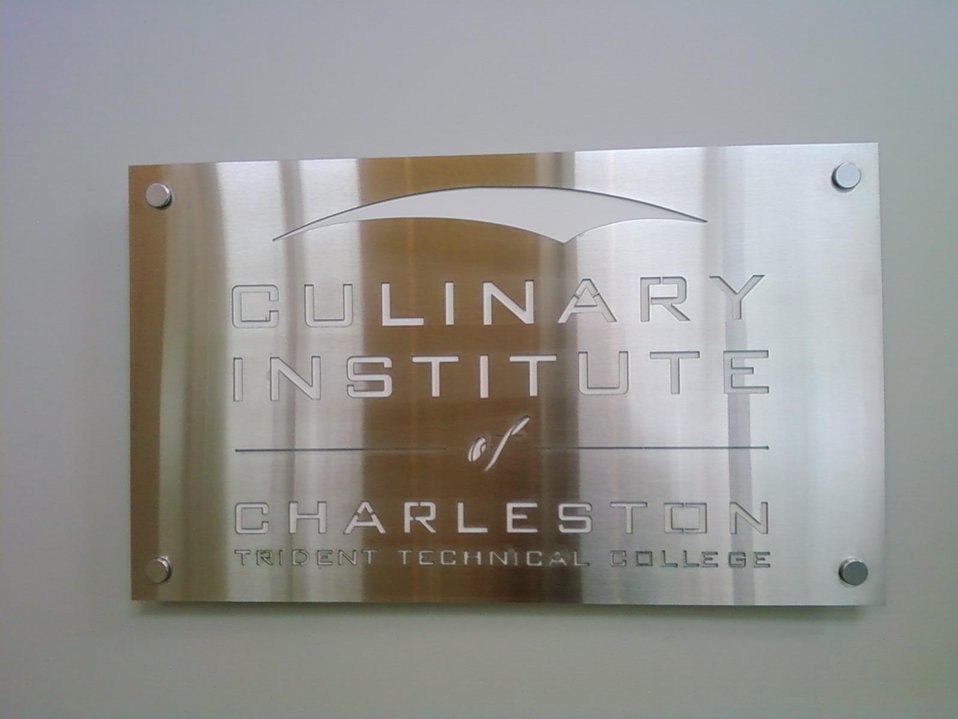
Field Hearing on Broadband Adoption 10-6-09